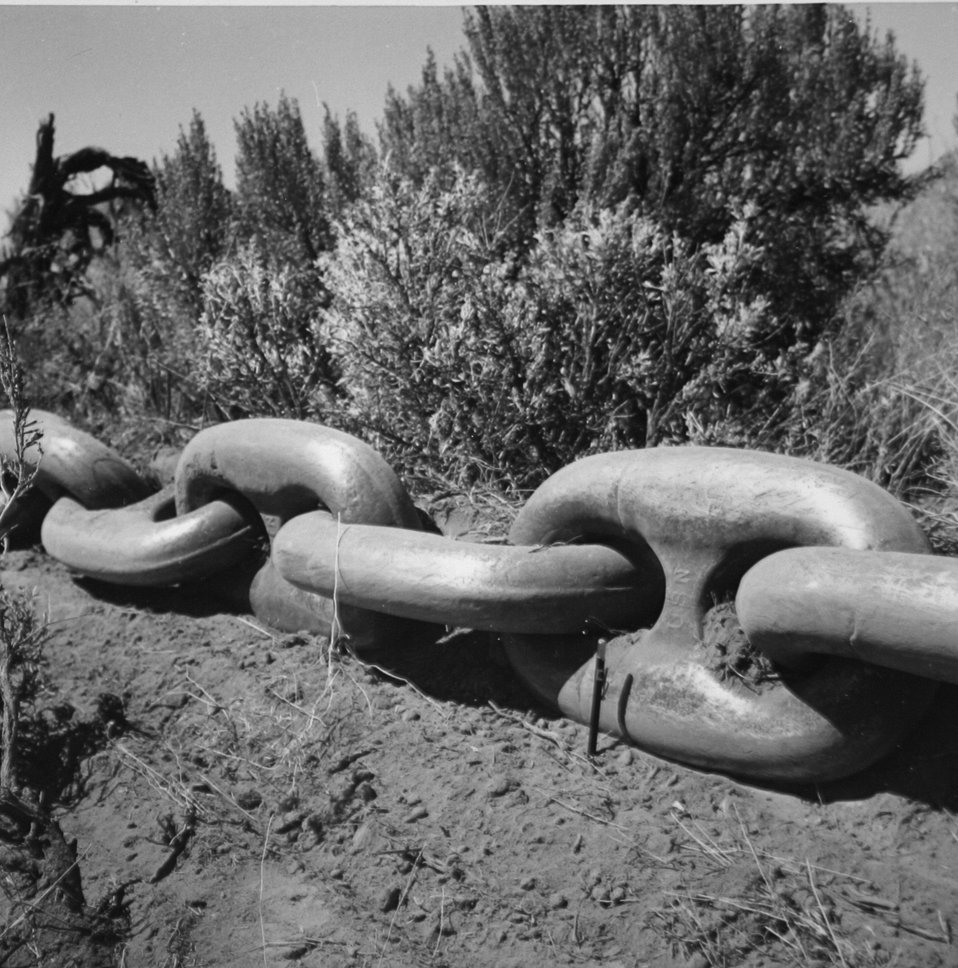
2165 8-17-60 Howard R. DeLano Chaining operation using surplus U.S. Navy anchor chain. Note size of chain in relationship to pencil stuck in the ground.